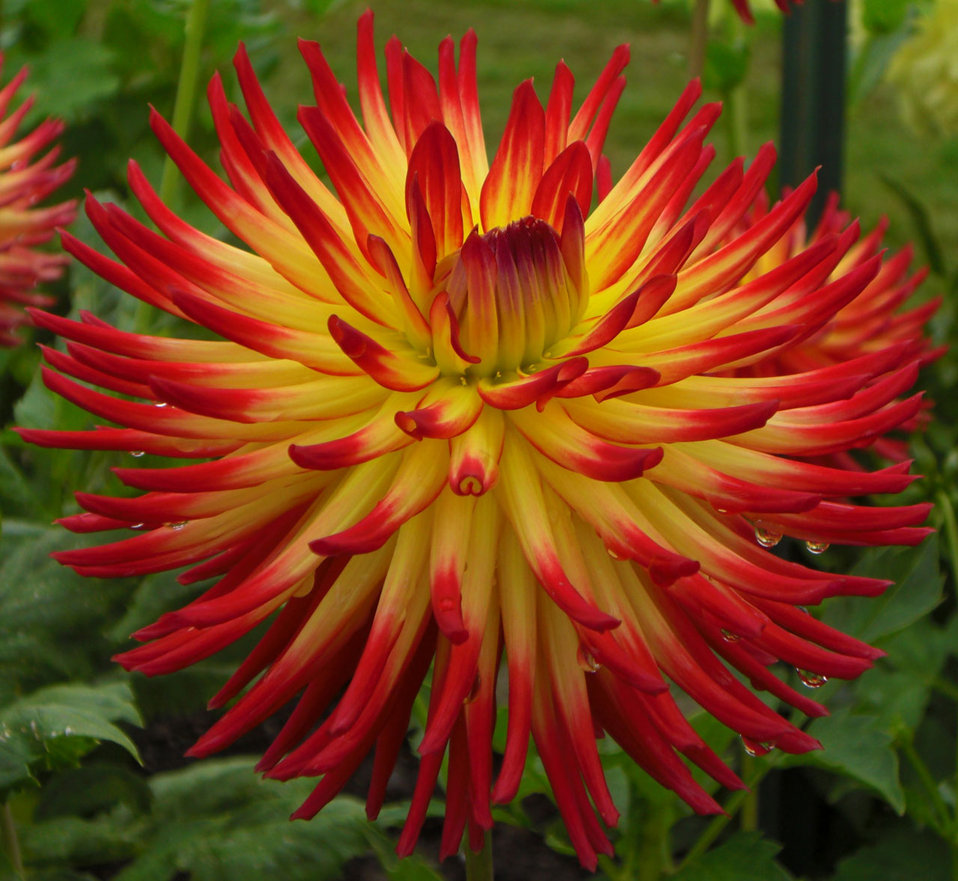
Hamari accord flower in point defiance, tacoma..